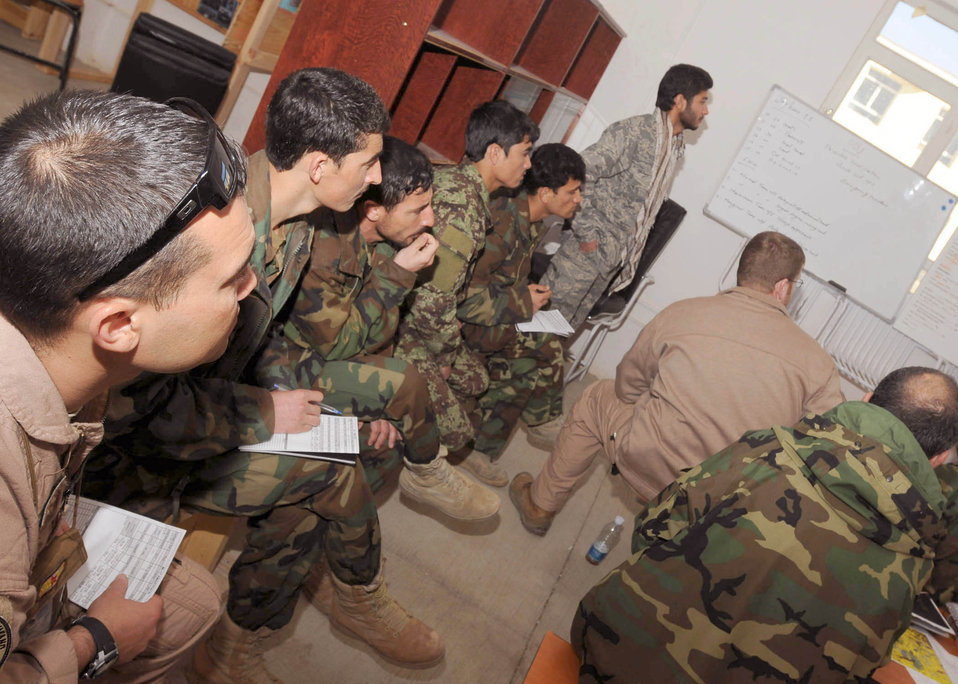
Afghan flying crew chiefs

Staff Sgt. Christopher Morford sits with the four students during a mission brief March 8, 2011, at Shindand, Afghanistan. Sergeant Morford is a flying crew chief adviser with the NATO Air Training Command-Afghanistan.